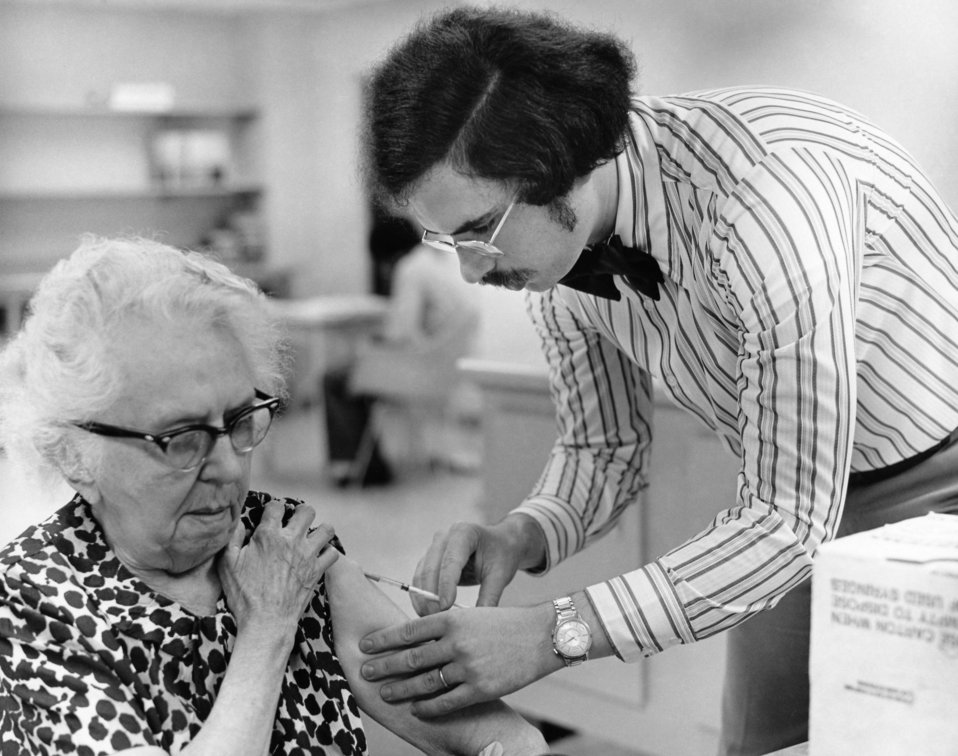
This 1976 photograph showed an elderly female as she was receiving a vaccination by a public health clinician during the nationwide swine flu vaccination campaign, which began October 1, 1976.